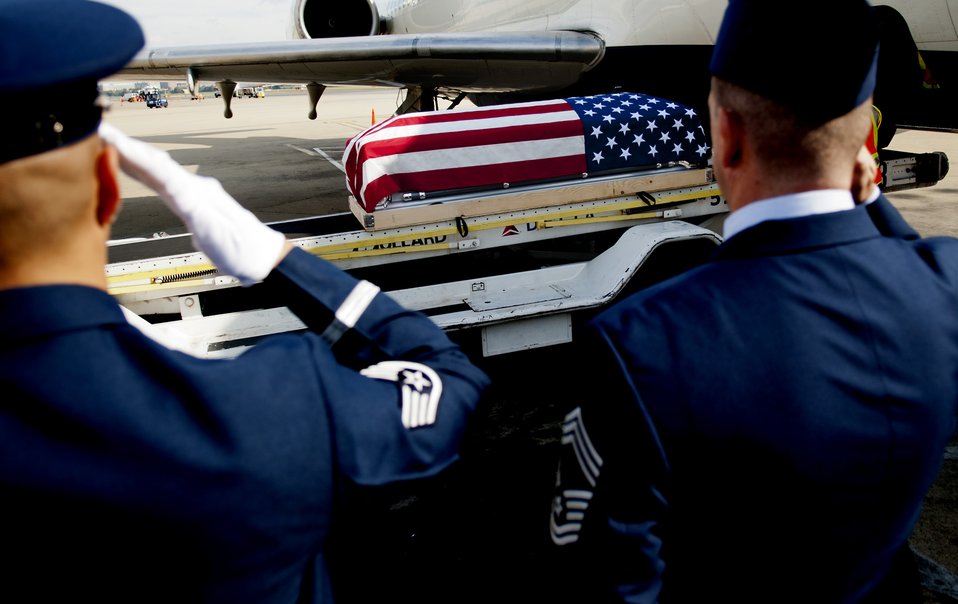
Full military honors

U.S. Airmen salute as the remains of Col. Wendell Keller, of Fargo N.D. and Capt.Virgil K. Meroney, of Fayetteville, Ark., arrive in a casket draped with the U.S. Flag at Ronald Reagan Washington National Airport Oct. 18, 2012. The U.S. Air Force Honor Guard and family members were present at the arrival. March 1, 1969, Keller and Meroney were the crew of an F-4D Phantom II aircraft that went down while carrying out a night time strike mission in Khammouan Province, Laos. Nearby aircrews reported seeing the aircraft hit by enemy fire. No parachutes were seen after the aircraft was hit. Heavy enemy presence in the area prevented recovery efforts.